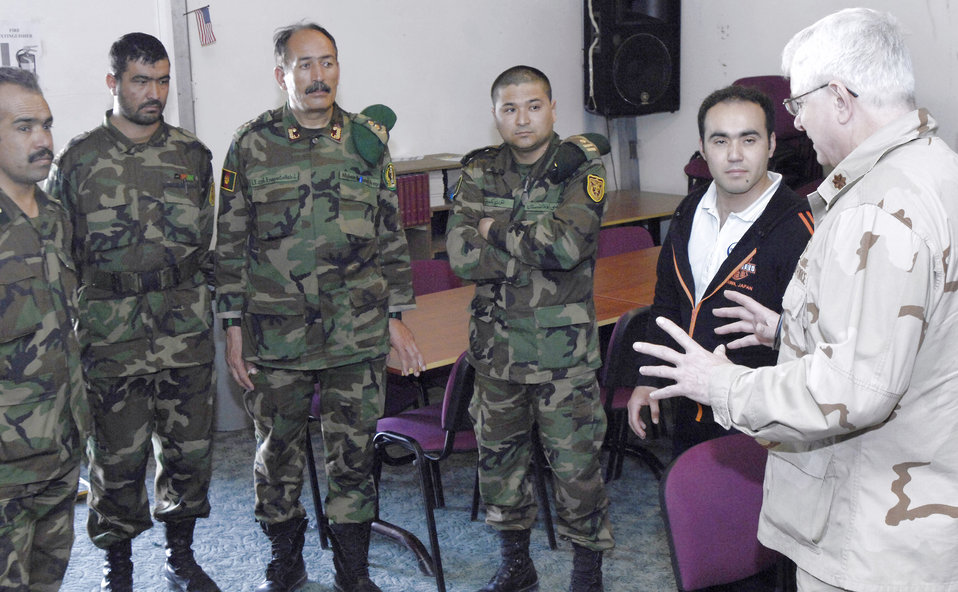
Afghan commanders visit chapel

Commanders from the Afghan national army are briefed by Chaplain (Maj.) William Bartoul (far right) March 24 at Manas Air Base, Kyrgyzstan. The Afghan commanders, who are transiting Manas AB on their way back from training in Germany, asked for a tour of the facility. Chaplain Bartoul briefed the commanders on the variety of worship available at the base and how base chaplains help facilitate servicemembers of all religions to practice their faith. Chaplain Bartoul is assigned to the 376th Air Expeditionary Wing.